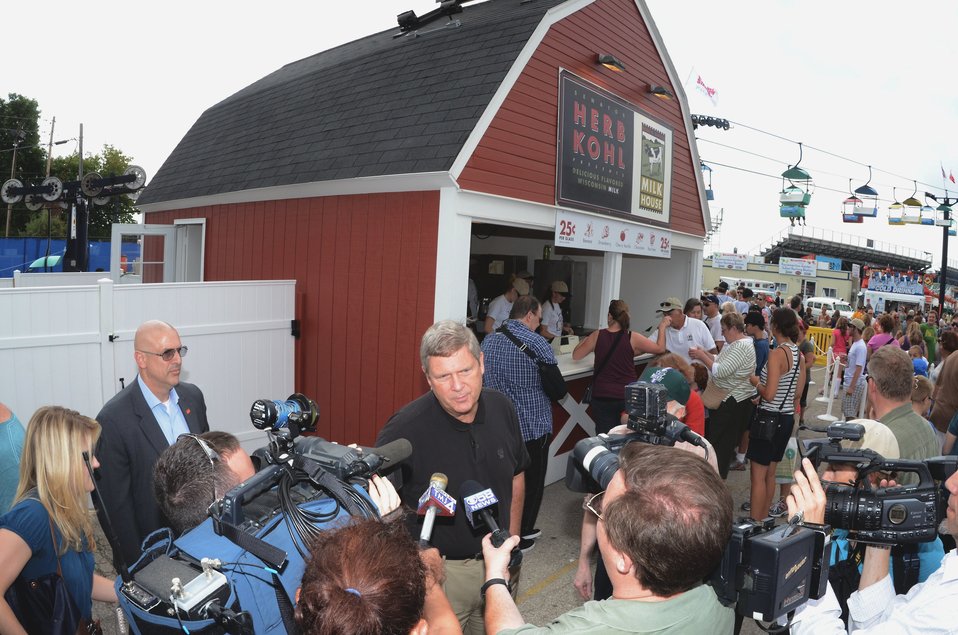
Agriculture Secretary Tom Vilsack speaking with the press at the Wisconsin State Fair in West Allis, WI, on Thursday, August 4, 2011, USDA Photo by Lance Cheung.